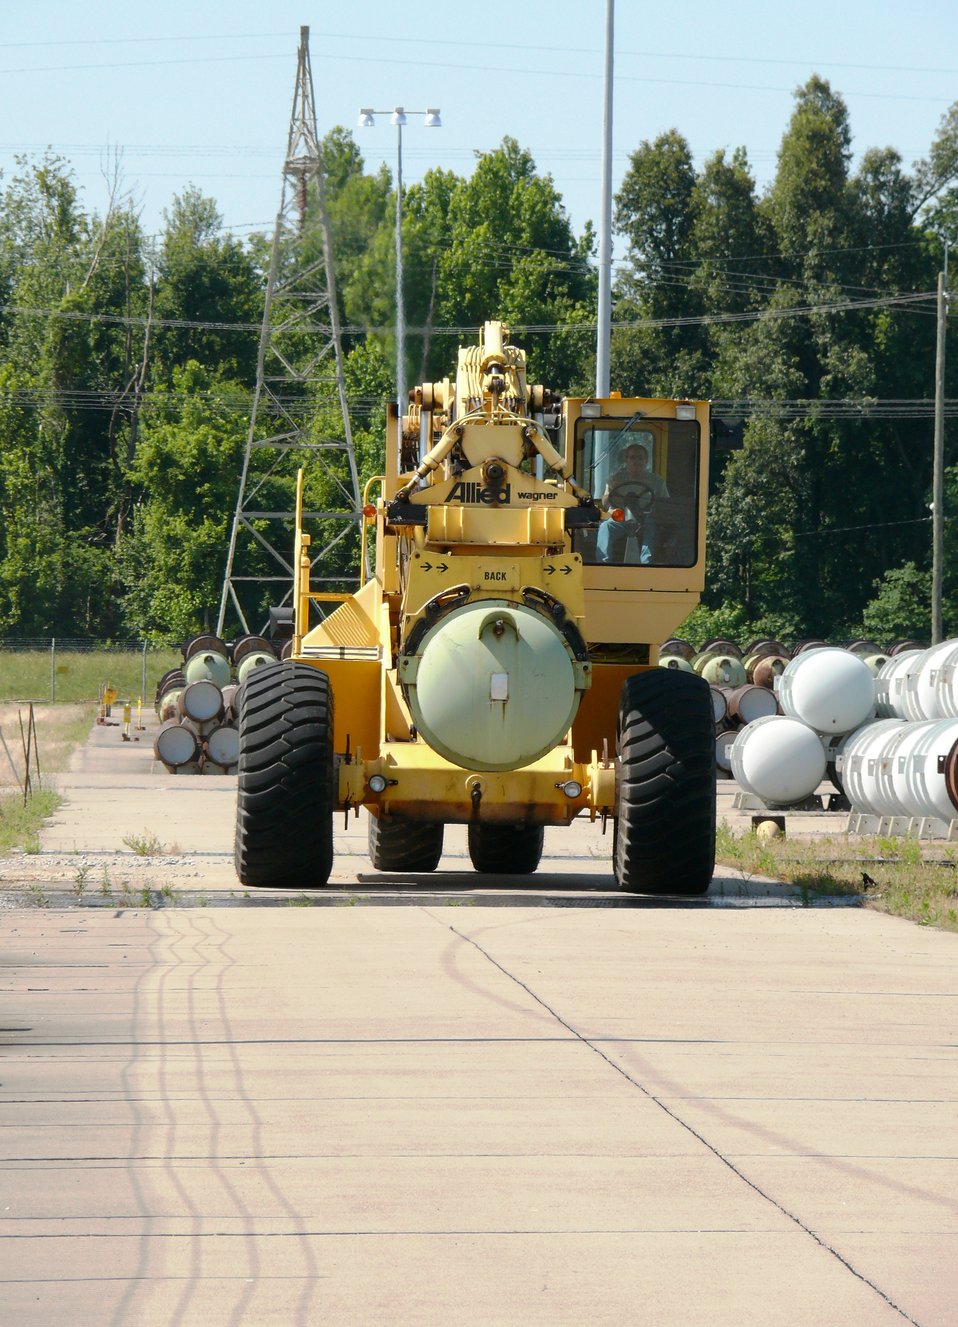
Re-enrichment agreement at Paducah

This cylinder hauler at Paducah’s Babcock & Wilcox Conversion Services plant delivers the first of DOE’s 14-ton depleted uranium cylinders to USEC for re-enrichment as part of a five-party agreement that is extending enrichment operations at the 60-year-old plant for another year, delaying increased costs at the site for DOE.